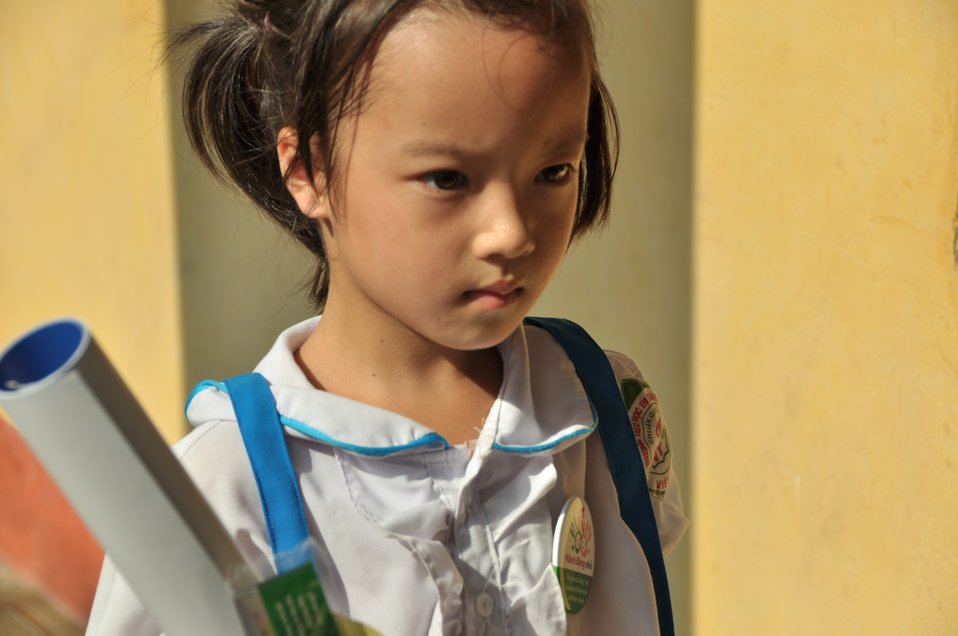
USAID supports deworming education and medication distribution in Bac Giang Province

May 20, 2013